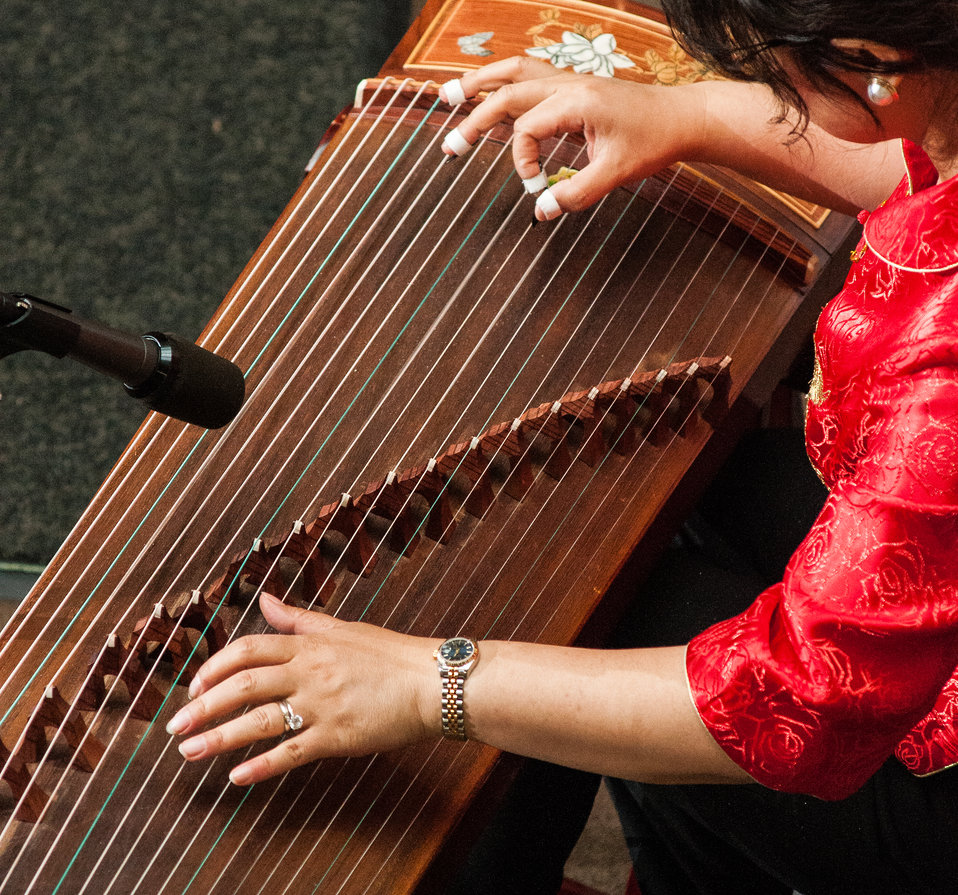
Washington Chinese Traditional Orchestra’s Huilan Chen gives a solo performance of “Gao Shan Liu shui” and “Yi zu Wu qu” on the Guzheng, an ancient type of musical instrument, during the U.S. Department of Agriculture (USDA) Asian Pacific American Heritage Month Observance, at the USDA headquarters, Whitten Building patio, in Washington, D.C., on Thursday, May 23, 2013. This year’s theme is “Building leadership; Embracing the Cultural Values and Inclusions.”